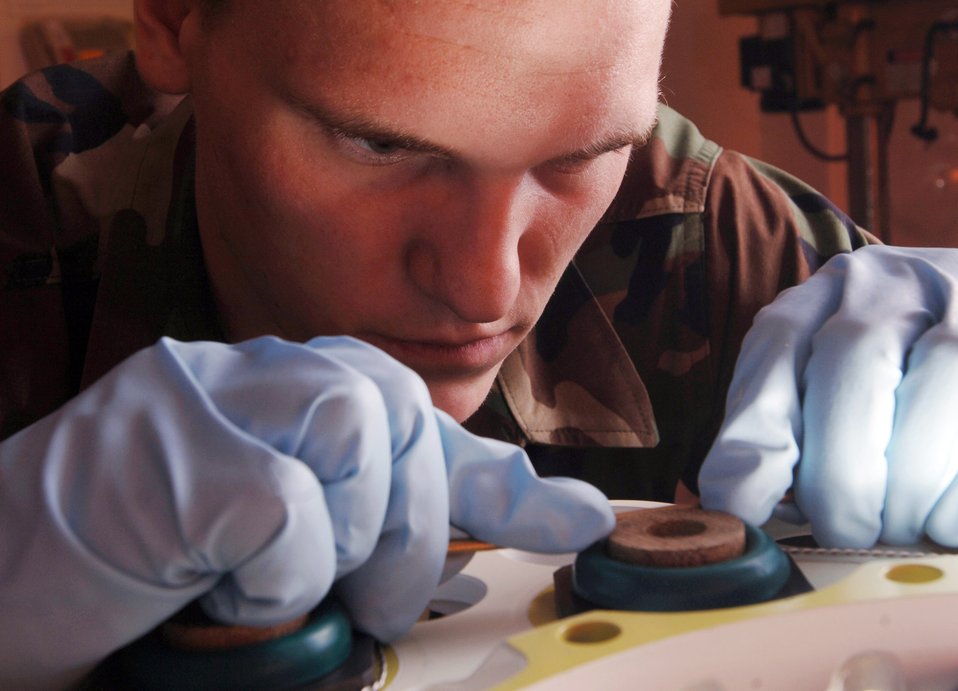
Gimme a brake

YOKOTA AIR BASE, Japan -- Airman 1st Class Daniel Arrington inserts pistons on a C-130 Hercules brake assembly carrier at his facility here. A pneudraulics element troop with the 374th Maintenance Squadron, he overhauls, modifies and tests all pneudraulics components on the C-130s assigned here and those that land here in transit.